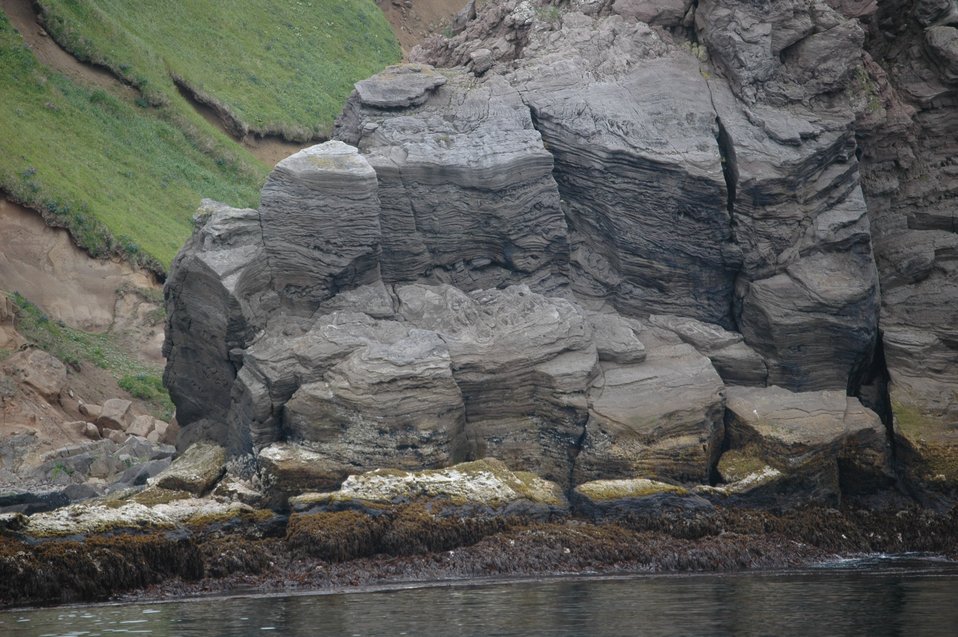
A finely laminated rock outcrop